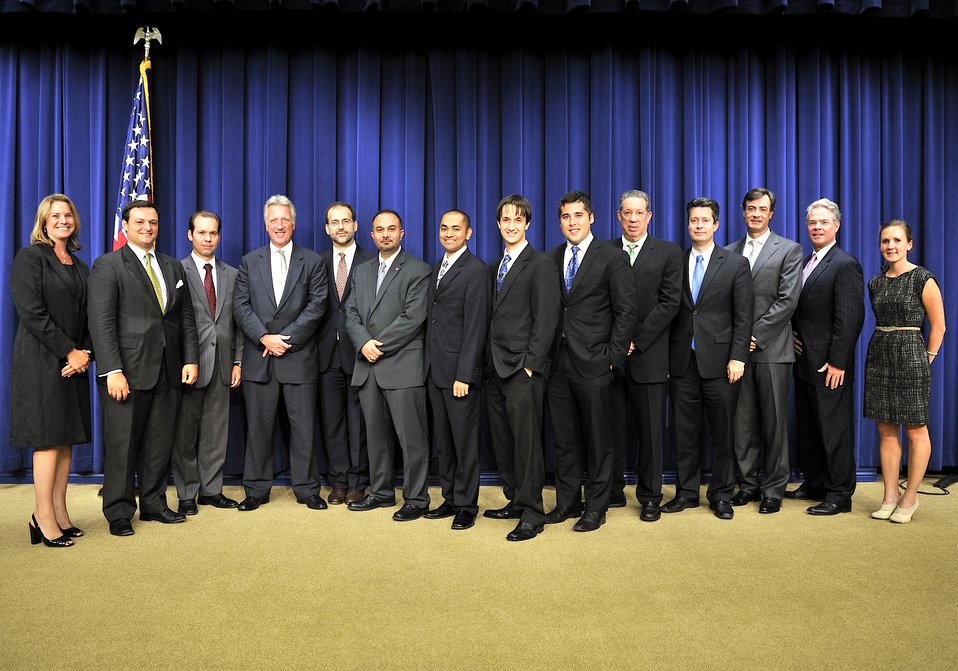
National Clean Energy Business Plan Competition

The National Clean Energy Business Plan Competition inspired nearly 300 university teams across the country to create new businesses to commercialize promising energy technologies developed at U.S. universities and the National Laboratories.